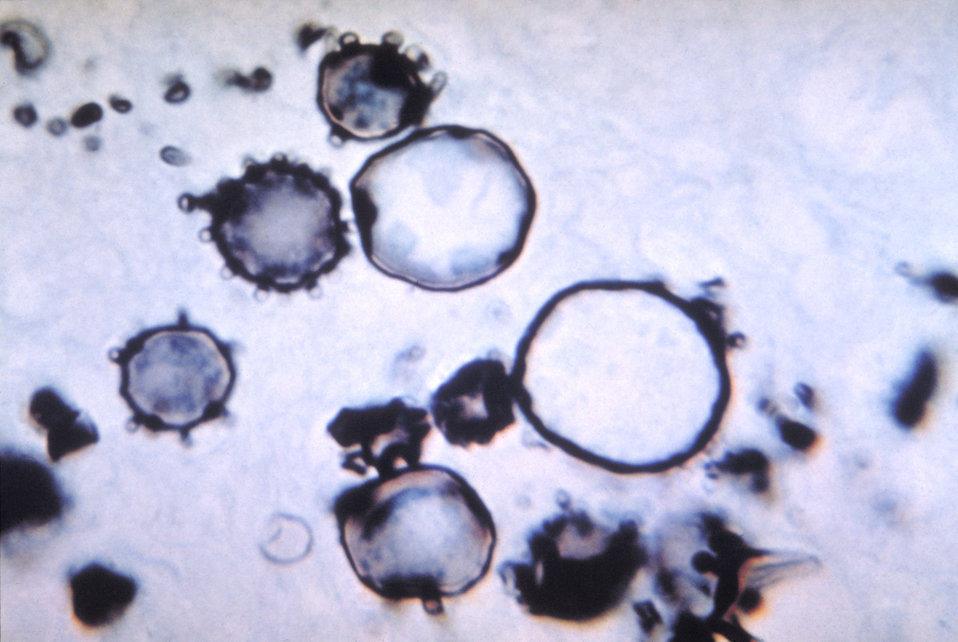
Histopathology of paracoccidioidomycosis, liver. Methenamine silver stain.